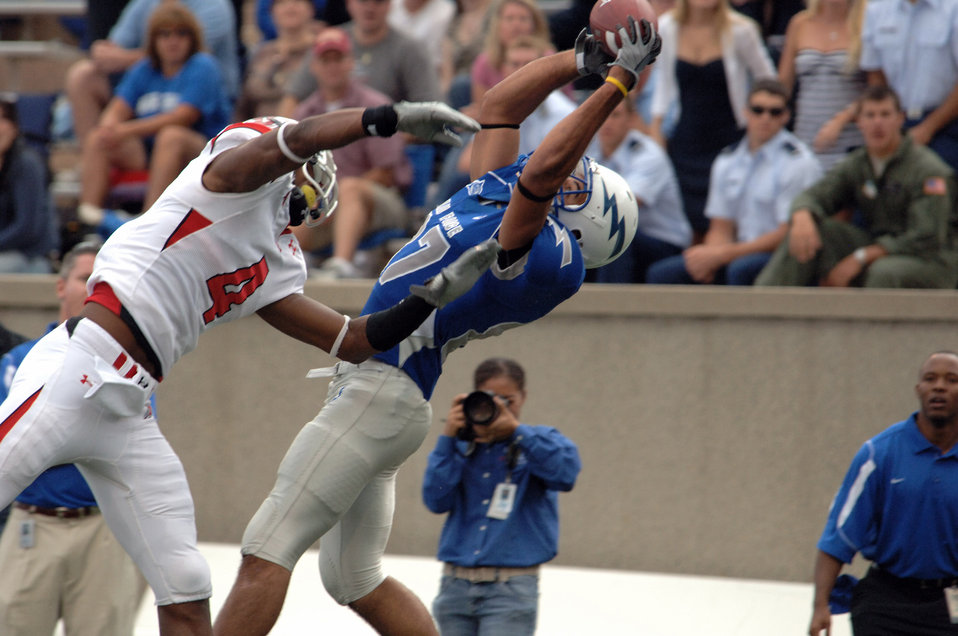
Football: Utah downs Air Force 30-23

U.S. Air Force Academy wide receiver Josh Cousins stretches to haul in a 29-yard gain over Utah cornerback Sean Smith, moving the sticks to the Utah 2-yard-line and setting up Air Force's last score Sept. 20 at the Academy in Colorado.